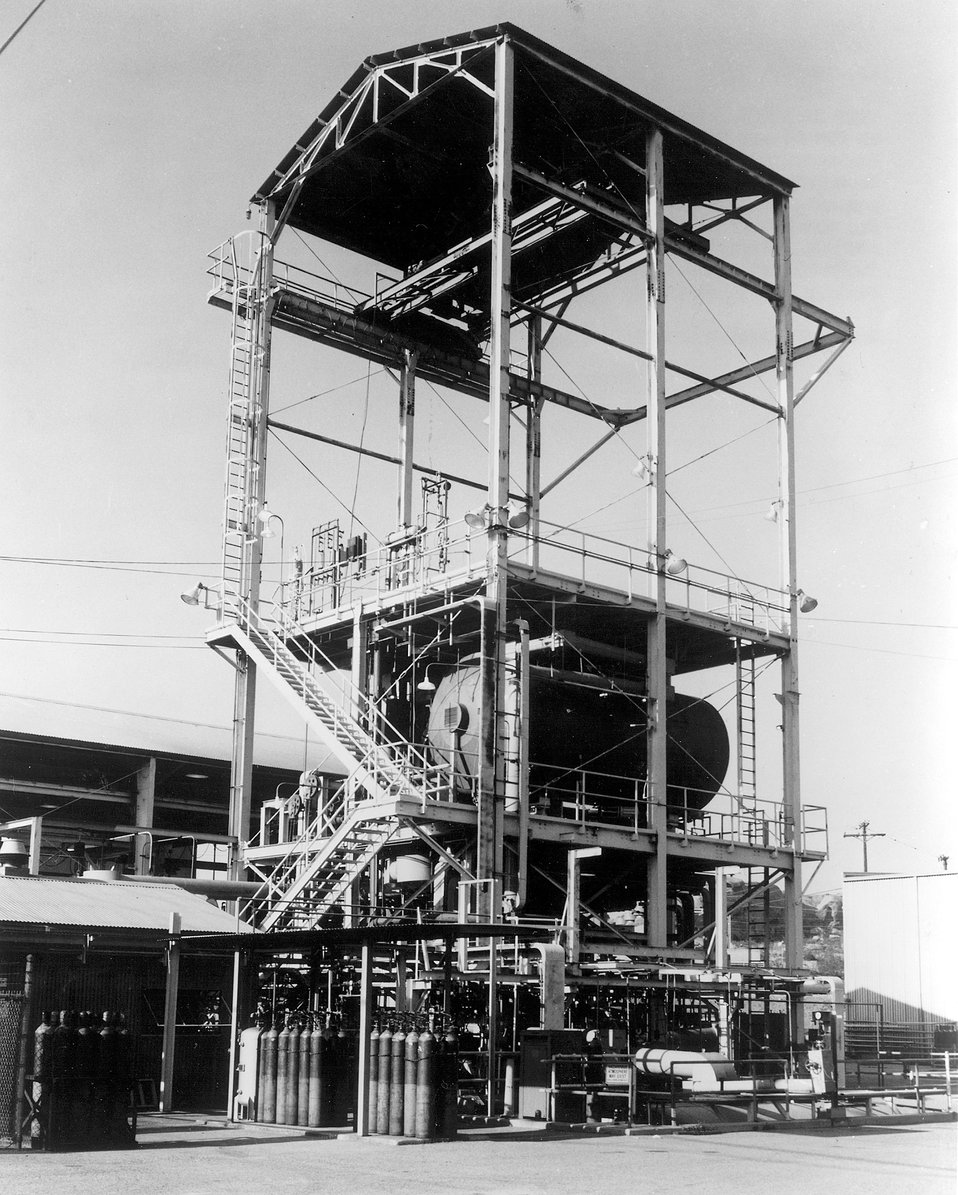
One of the principal facilities at the Atomic Energy Commission's Liquid Metal Engineering Center (LMEC) is this Large Component Test Loop for thermal shock testing of sodium components, small valves, equipment and instruments for the liquid metal fast breeder reactor program. Atomic s International, a division of North American Rockwell, operates the Center at its Santa Susana Nuclear Field Laboratory. Circa 1970.